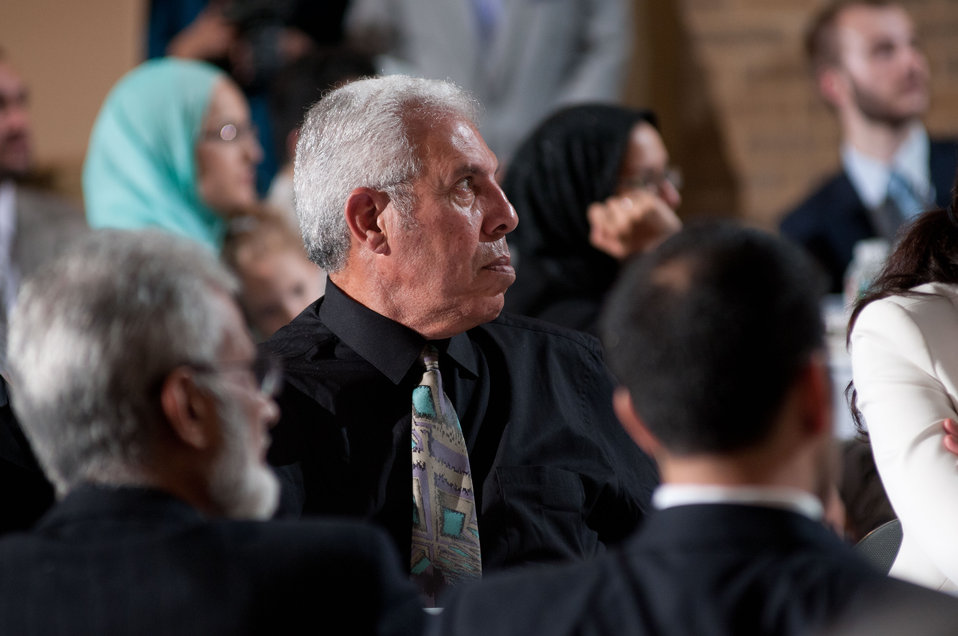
Guests watch Ridwan Adhami's multimedia presentation of “Scars and Smiles” at the Iftar event, co-sponsored by the Iftar celebration, co-sponsored by the U.S. Department of Agriculture, U.S. Agency for International Development (USAID) and Islamic Relief USA, on Tuesday, August 7, 2012, in the USDA Whitten Building, in Washington, D.C. Ramadan is the month of fasting, intensive prayer, sacrifice and worship for Muslims around the world. Throughout this month, Muslims fast during the day, abstaining from consuming food from dawn to dusk and using this time to purify spiritually. Fasting reminds Muslims of the poverty and hunger suffered by many in the United States and worldwide. It is a connection with those who are hungry not through devotion, but through the many global factors that lead to hunger and famine. Iftar is the meal at which Muslims break their fast at sunset, usually by eating dates, according to the Prophetic tradition.